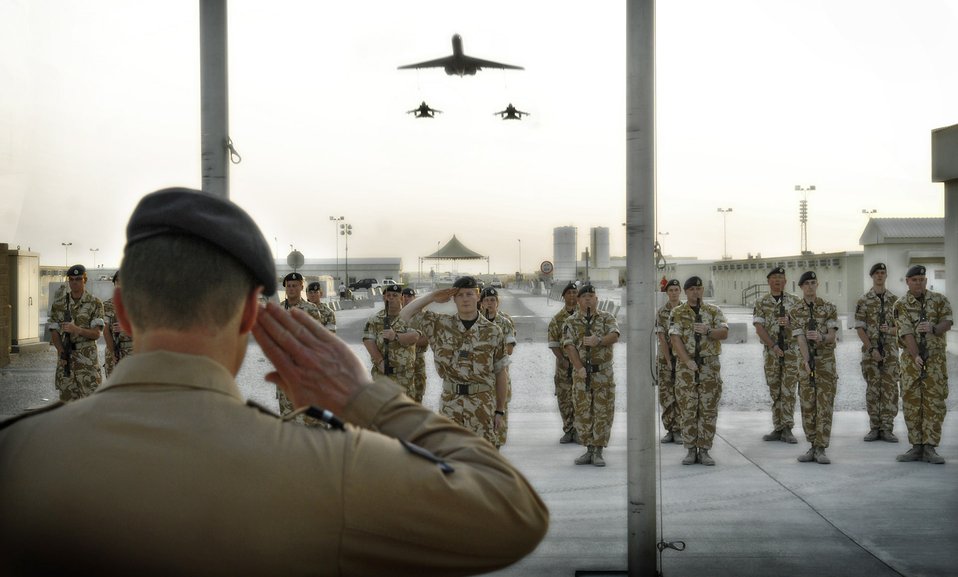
April 1 airpower summary: F-15s deter enemy activities

Squadron Leader Mark Wright renders a salute at a sunset ceremony in celebration of the 90th Anniversary of the Royal Air Force, April 1, as two RAF GR-4 Tornados from the 14th Squadron and a VC10 tanker from the Number 101 Squadron perform a fly over. The ceremony concluded with the raising of the Royal Air Force Ensign toward the sky.